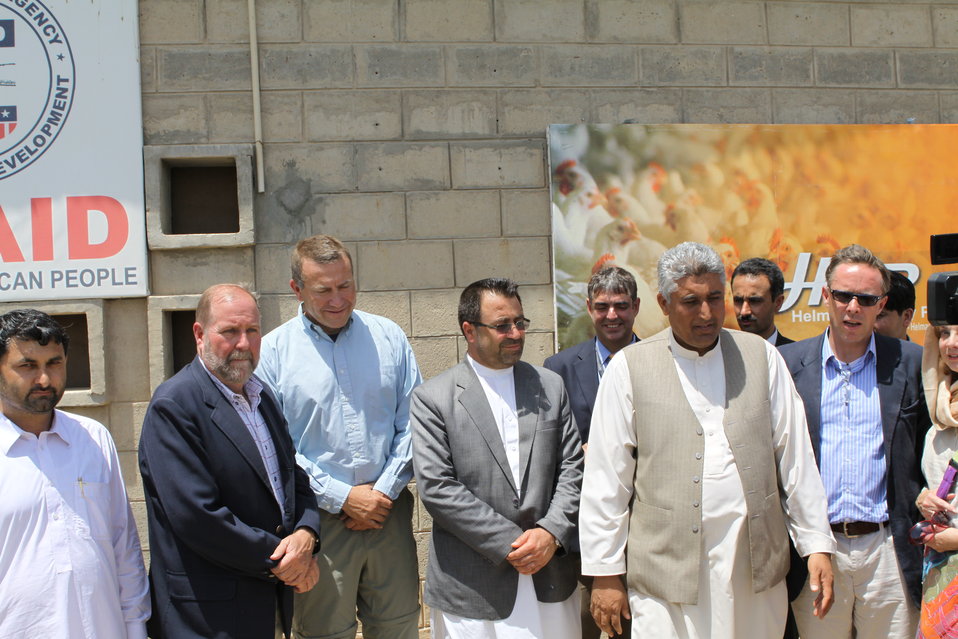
Bolan Poultry Farm